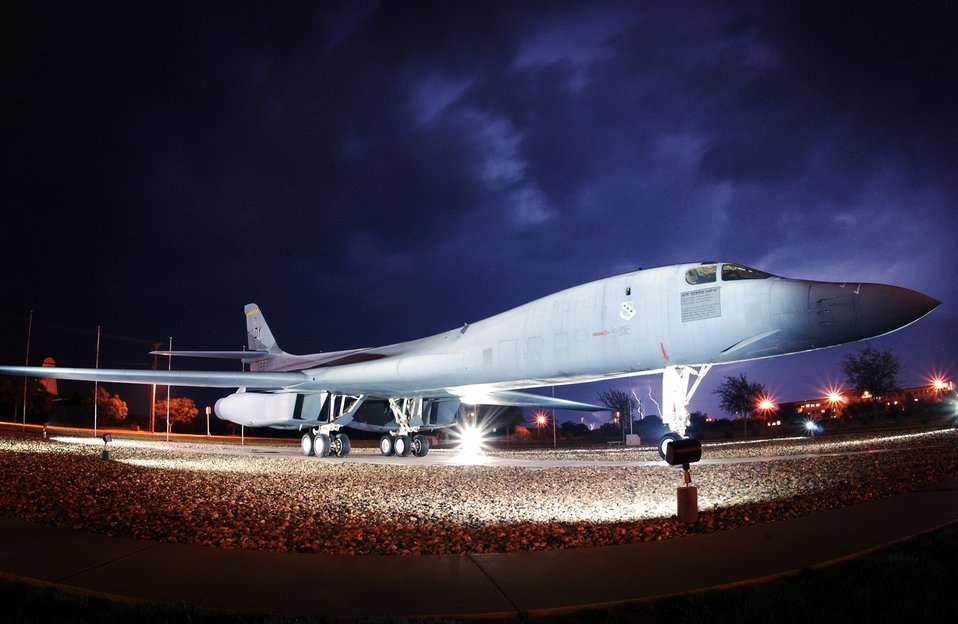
B-1 commemorates its 20th at Dyess

DYESS AIR FORCE BASE, Texas -- The first operational B-1B Lancer in the Air Force, also known as the Star of Abilene, sits on display here. The base celebrated the bomber's 20th anniversary June 29.